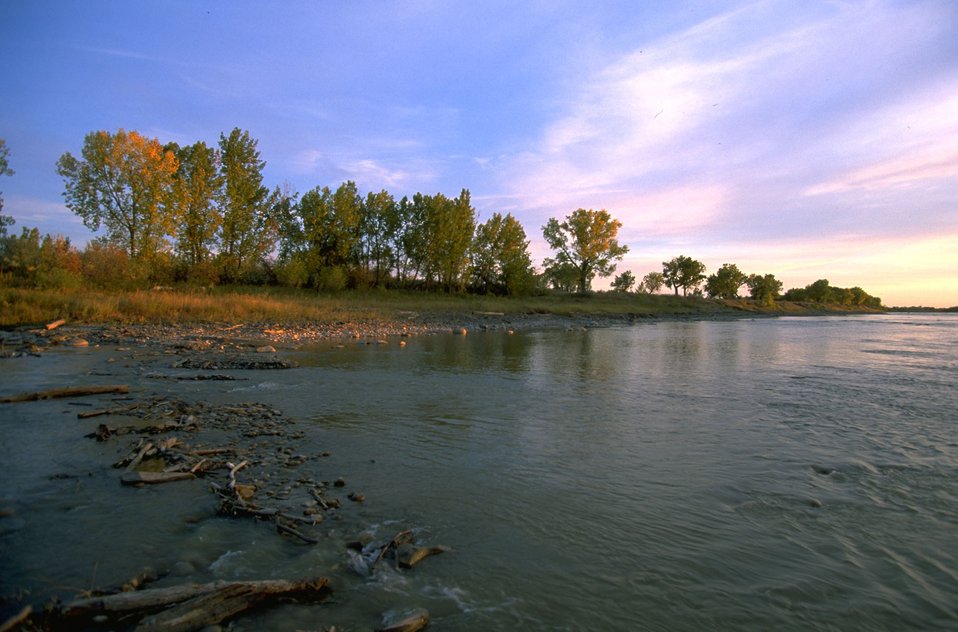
Trees along the bank of the Yellowstone River near Matthews Recreation Site